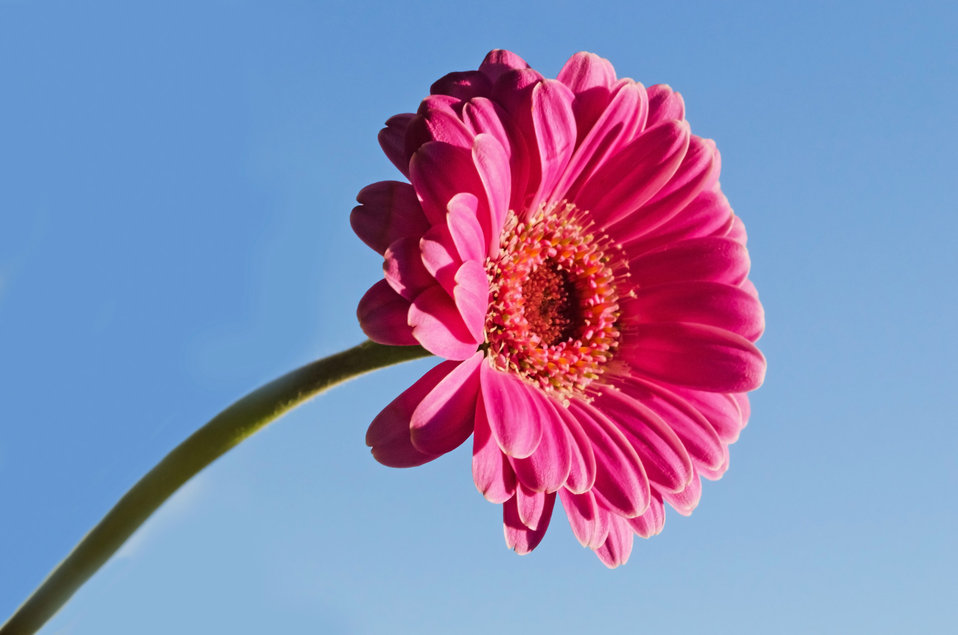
Nice flower.